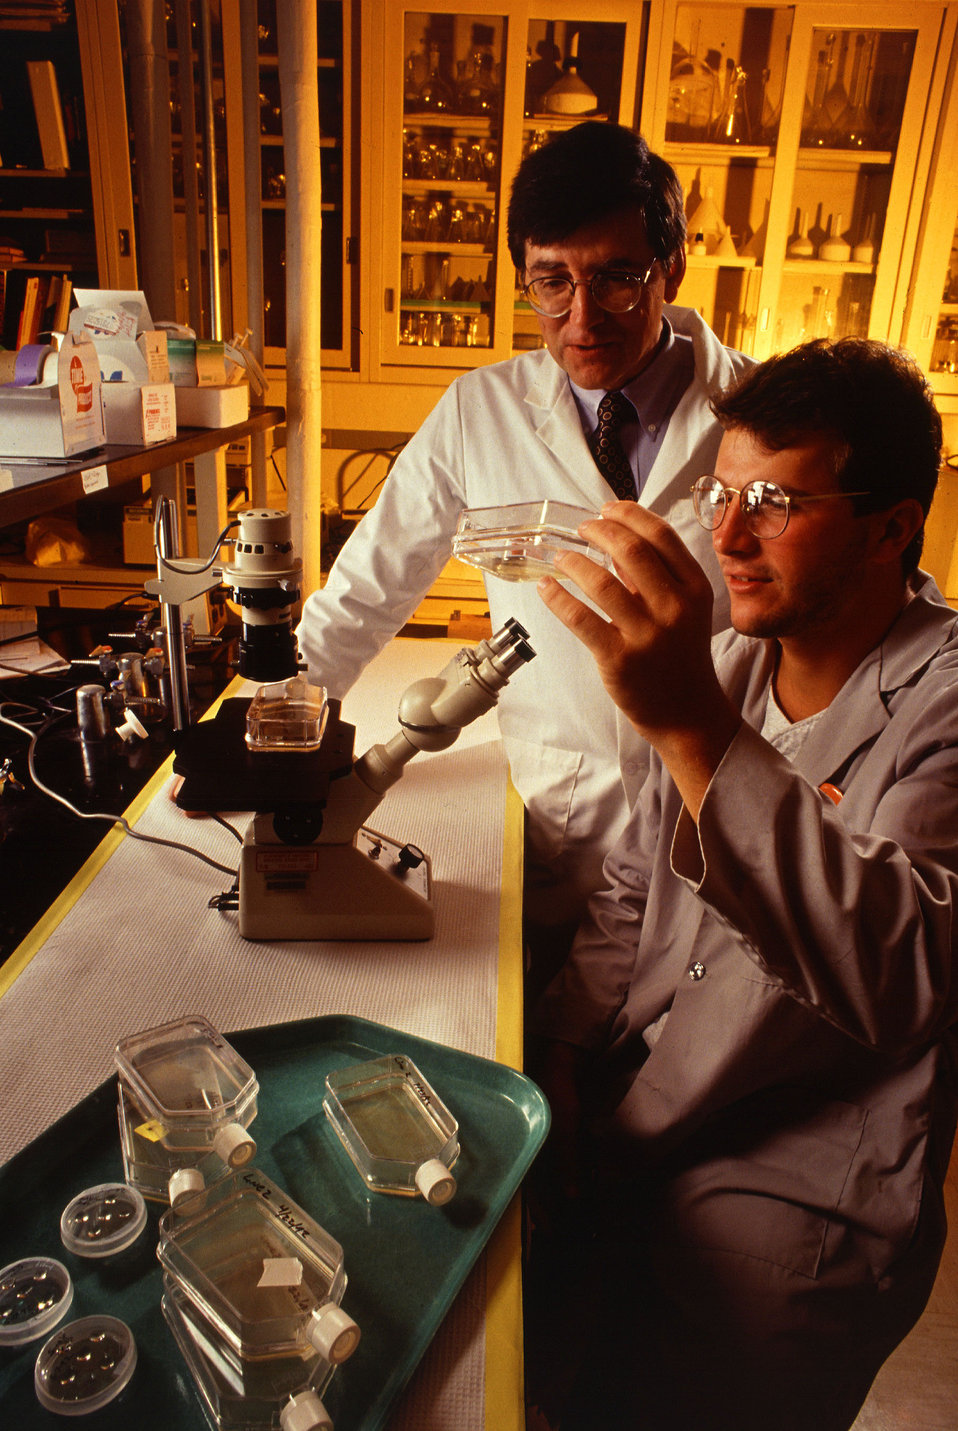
U.S. Department of Agriculture (USDA) Agricultural Research Service (ARS) entomologist Richard Mayer and technician Mike Burkhart examine insect cell cultures that will be used for metabolic studies.